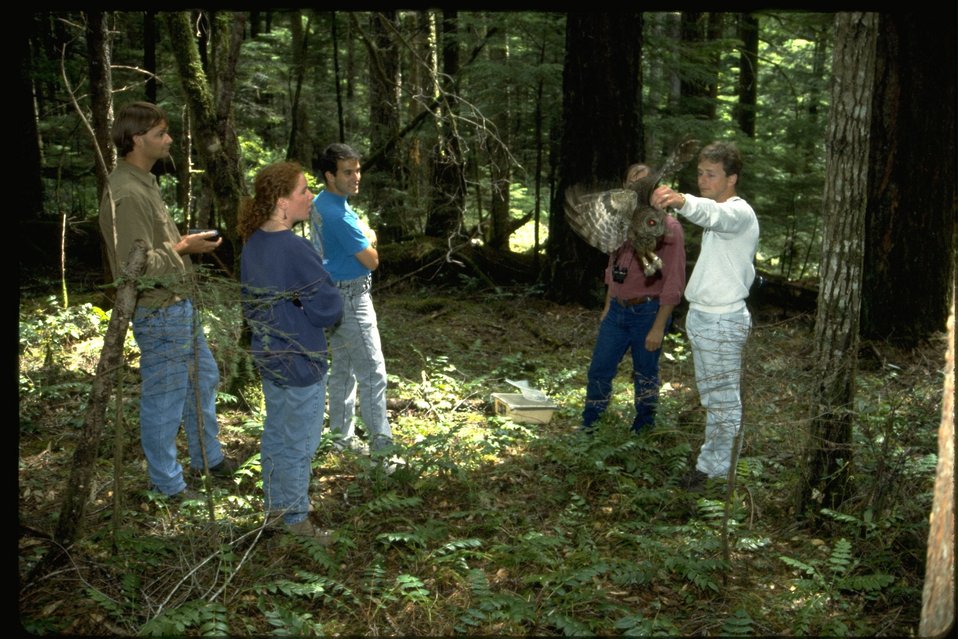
Holding a Northern Spotted Owl during discussion.